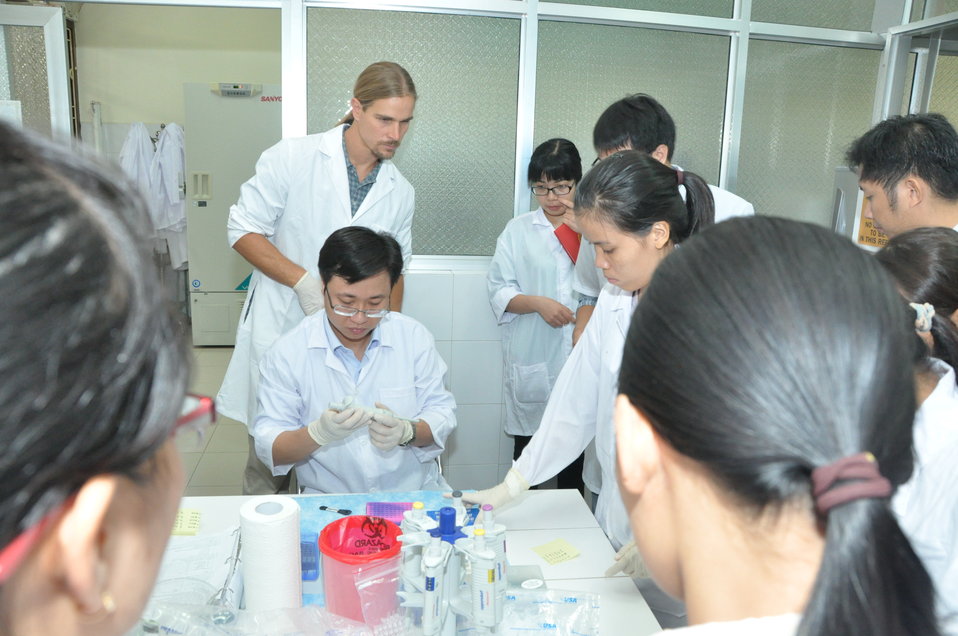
Animal virus detection lab training in Hanoi

Trainee learns how to detect viruses in Hanoi under a USAID program.